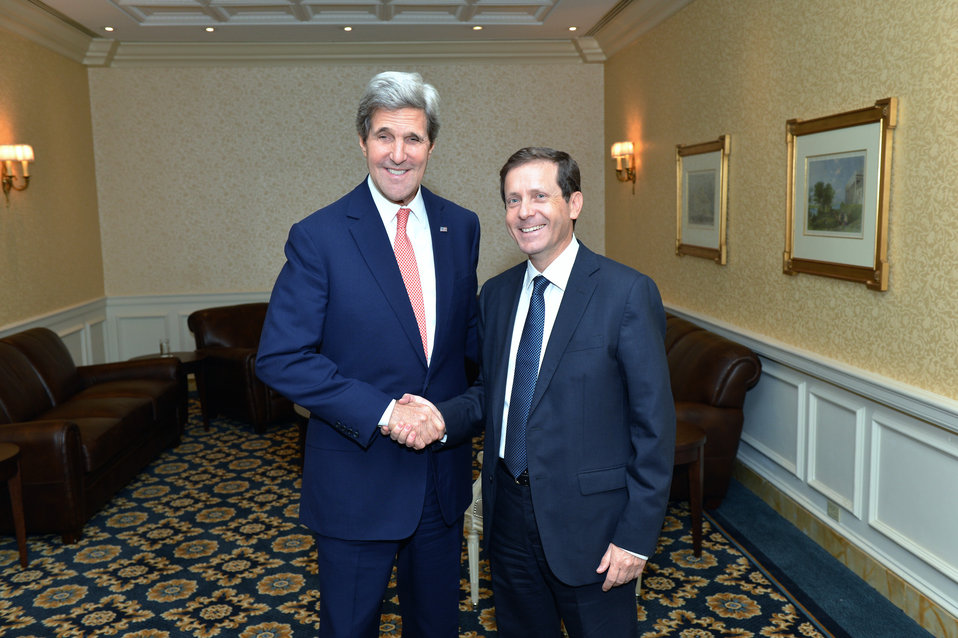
Secretary Kerry meets with Israeli Opposition Leader Yitzhak Herzog in Washington, D.C., on December 7, 2013.